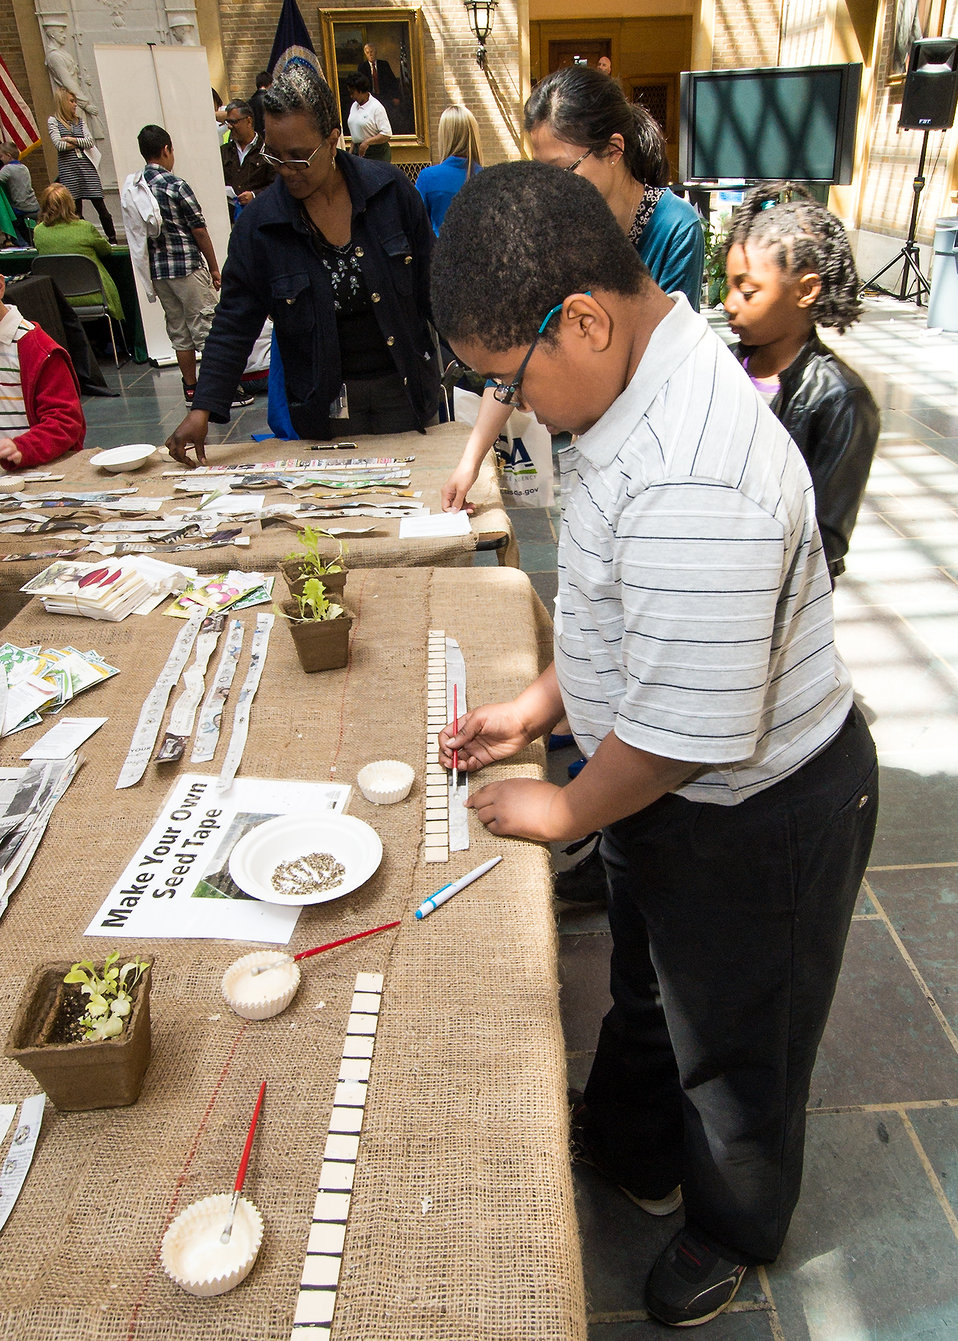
Jonathan Parker applies turnip seeds to newsprint with a paste of flour and water that he will be able to take home and plant in is family’s garden at the U.S. Department of Agriculture's (USDA) annual “Bring Your Daughters and Sons to Work on Thursday, Apr. 24, 2014 in Washington, D.C. The event offers employees the opportunity to bring their children to work to experience what they do in their profession and offer insight into other careers at USDA. Jonathan’s father Vance works for the USDA's Natural Resources Conservation Service (NRCS).